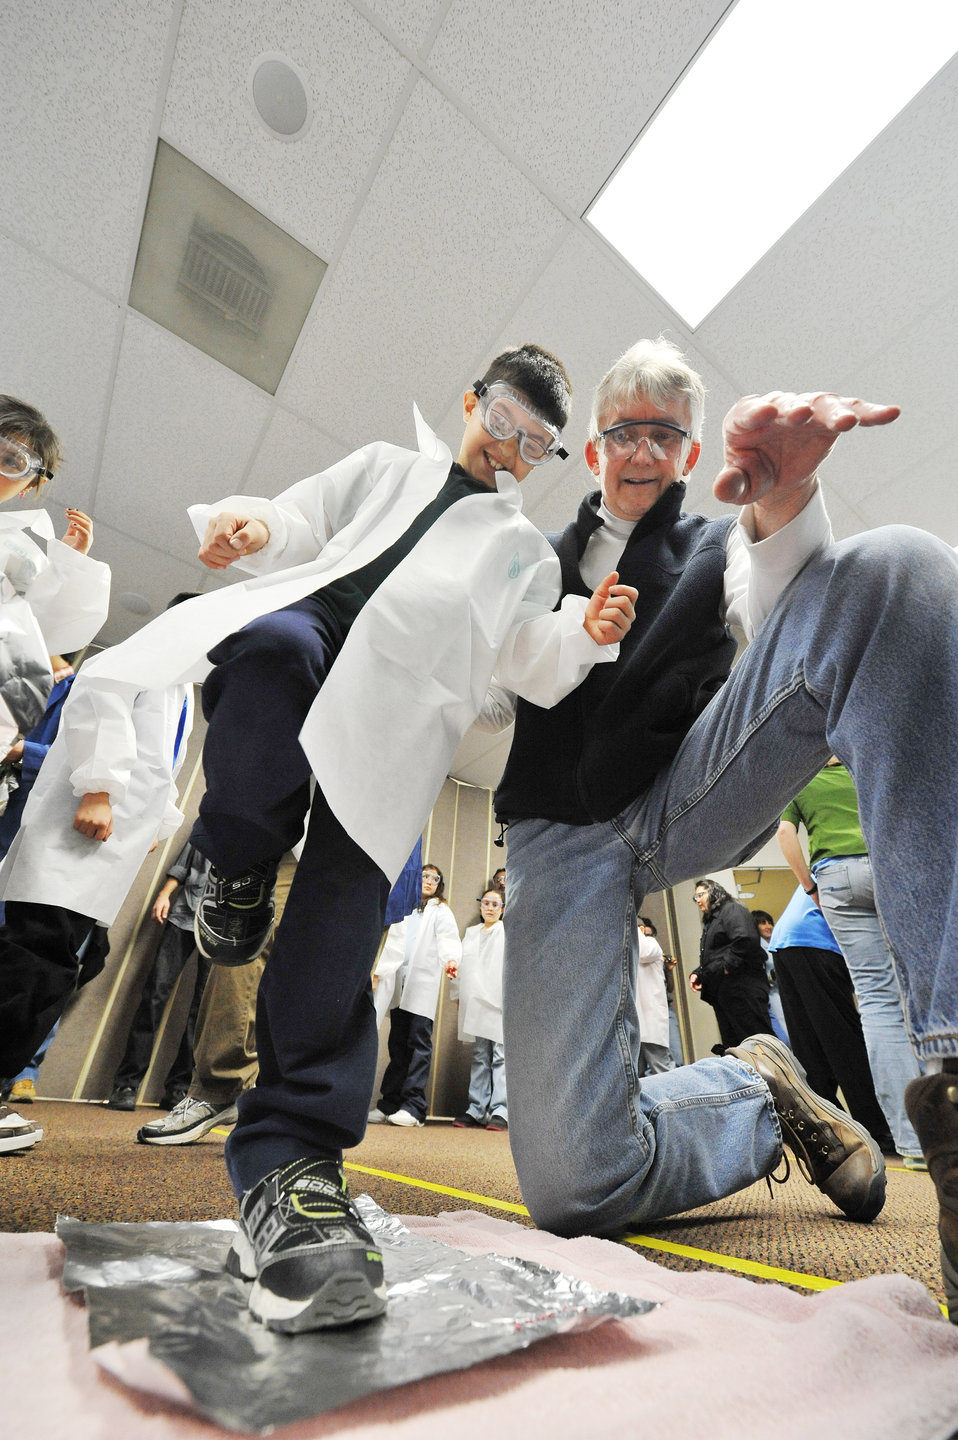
Shown is an outreach designed to produce students who are Hooked on Science at Sandia National Laboratory.

During the week of January 10, the Advanced Materials Laboratory of Sandia National Laboratories invited about 200 fourth-grade students to attend one of eight sessions of purposeful and fun hands-on science experience.